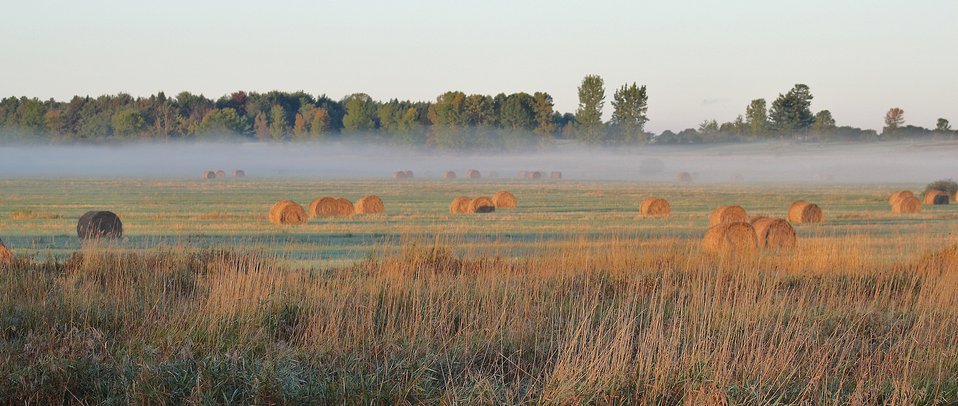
Foggy Hayfield

Steamy grasslands at Missisquoi National Wildlife Refuge